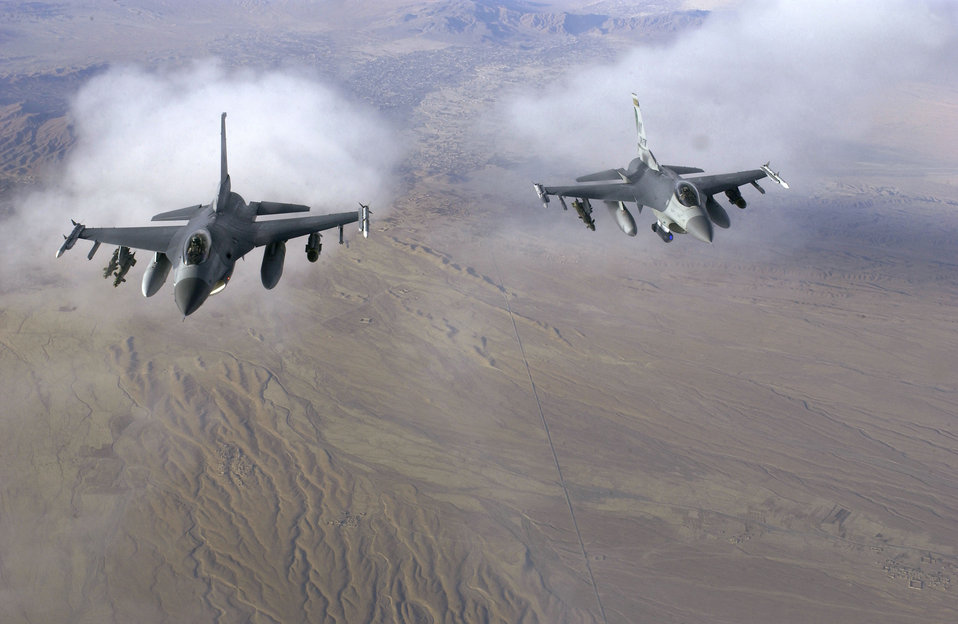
Fueling up

OVER AFGHANISTAN -- A pair of F-16 Fighting Falcons fly a patrol mission while supporting Operation Enduring Freedom on Nov. 29. The aircraft are from the New York Air National Guard's 174th Fighter Wing at Syracuse.